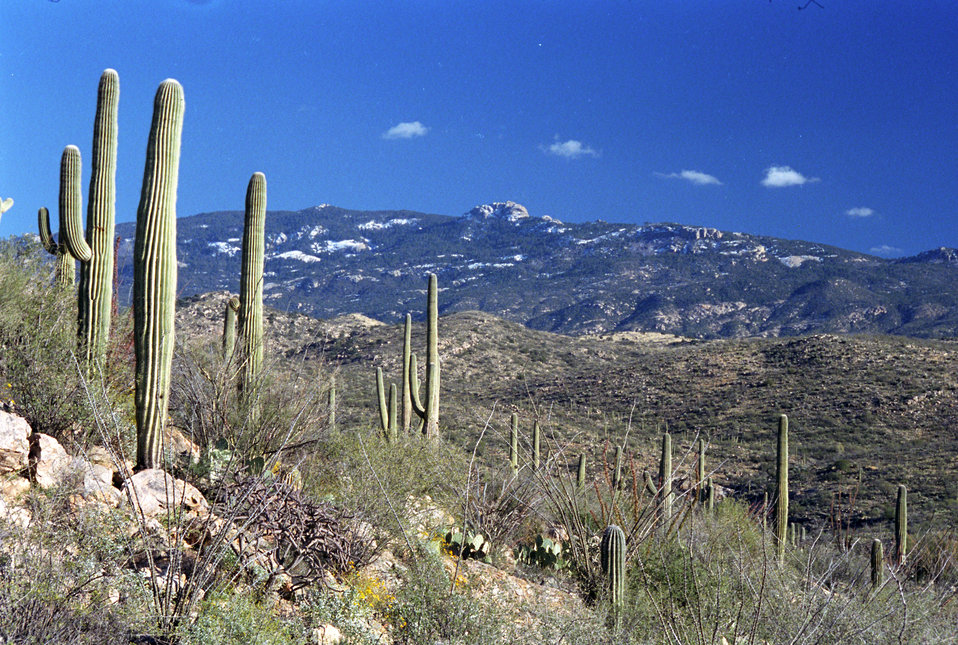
Saguaro cacti thrive on the desert part of the Tonto National Forest near Tucson, AZ on January 25, 2001. The Tonto National Forest near Tucson, AZ is the fifth largest forest in the U.S. and is one of the most-visited “urban” forests in the U.S. (approximately 5.8 million visitors annually). The forest is approximately 3 million acres of rugged and spectacularly beautiful country, ranging from Saguaro cactus-studded desert to pine-forested mountains beneath the Mogollon Rim.